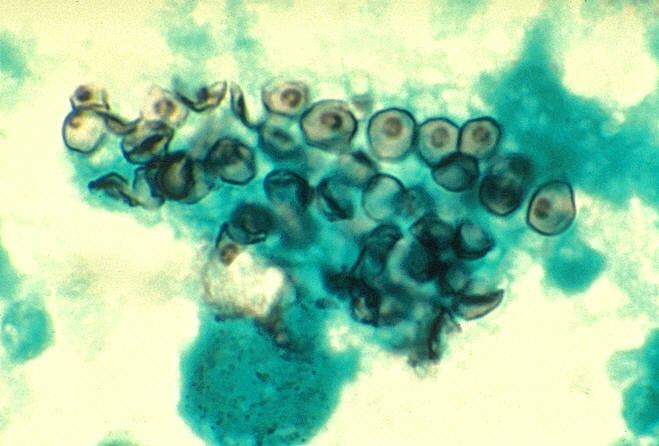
Cysts of Pneumocystis jirovecii, formerly known as Pneumocystis carinii, in smear from bronchoalveolar lavage. Methenamine silver stain.